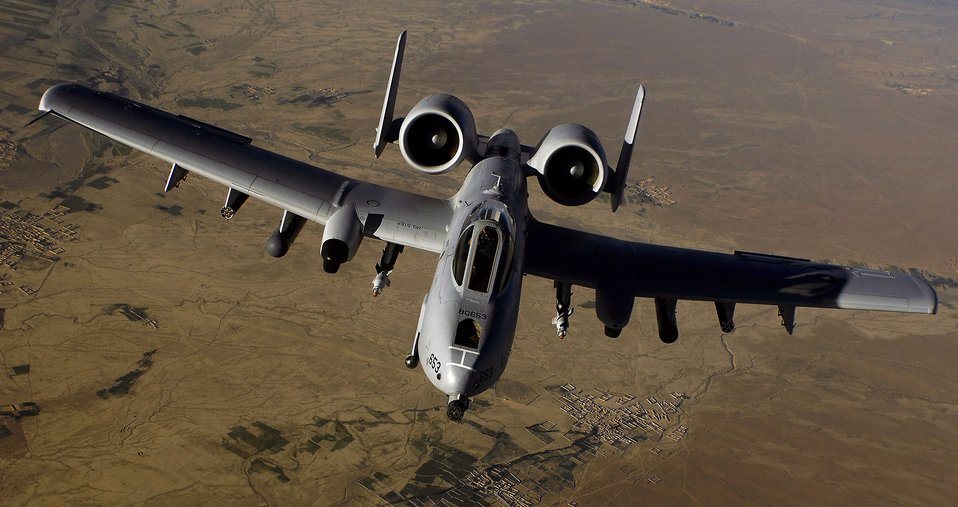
Primed to strike, ready for fuel

An A-10 Thunderbolt II moves into position to receive fuel May 29 from a KC-135 Stratotanker during a mission over Afghanistan.